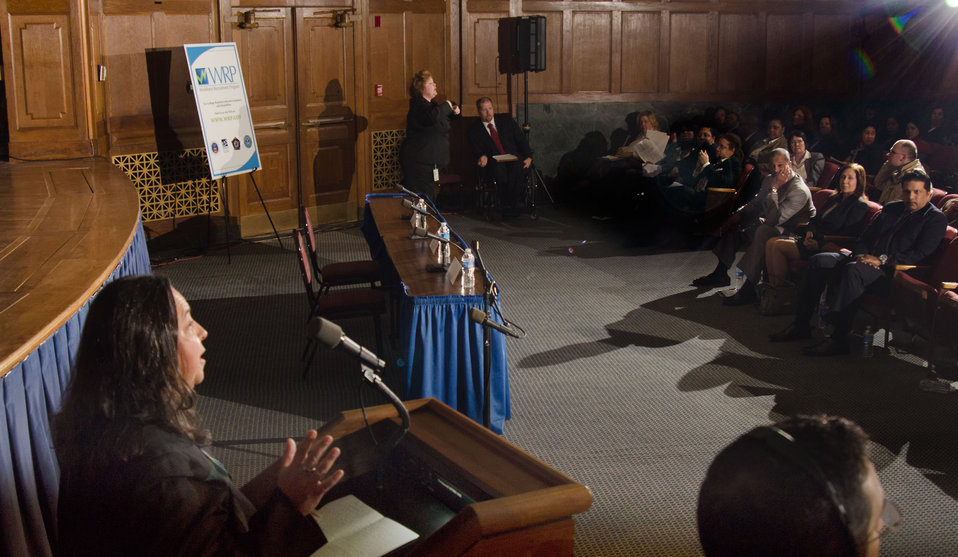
United States Department of Labor Assistant Secretary for the Office of Disability Employment Policy Kathy Martinez addresses the Work Force Recruitment Program’s (WRP) 'Your Key To Hiring Student Interns and Employees with Disabilities” event hosted by the United States Department of Agriculture (USDA) in the Jefferson Auditorium, Washington, D.C. on Tuesday, February 7, 2012.